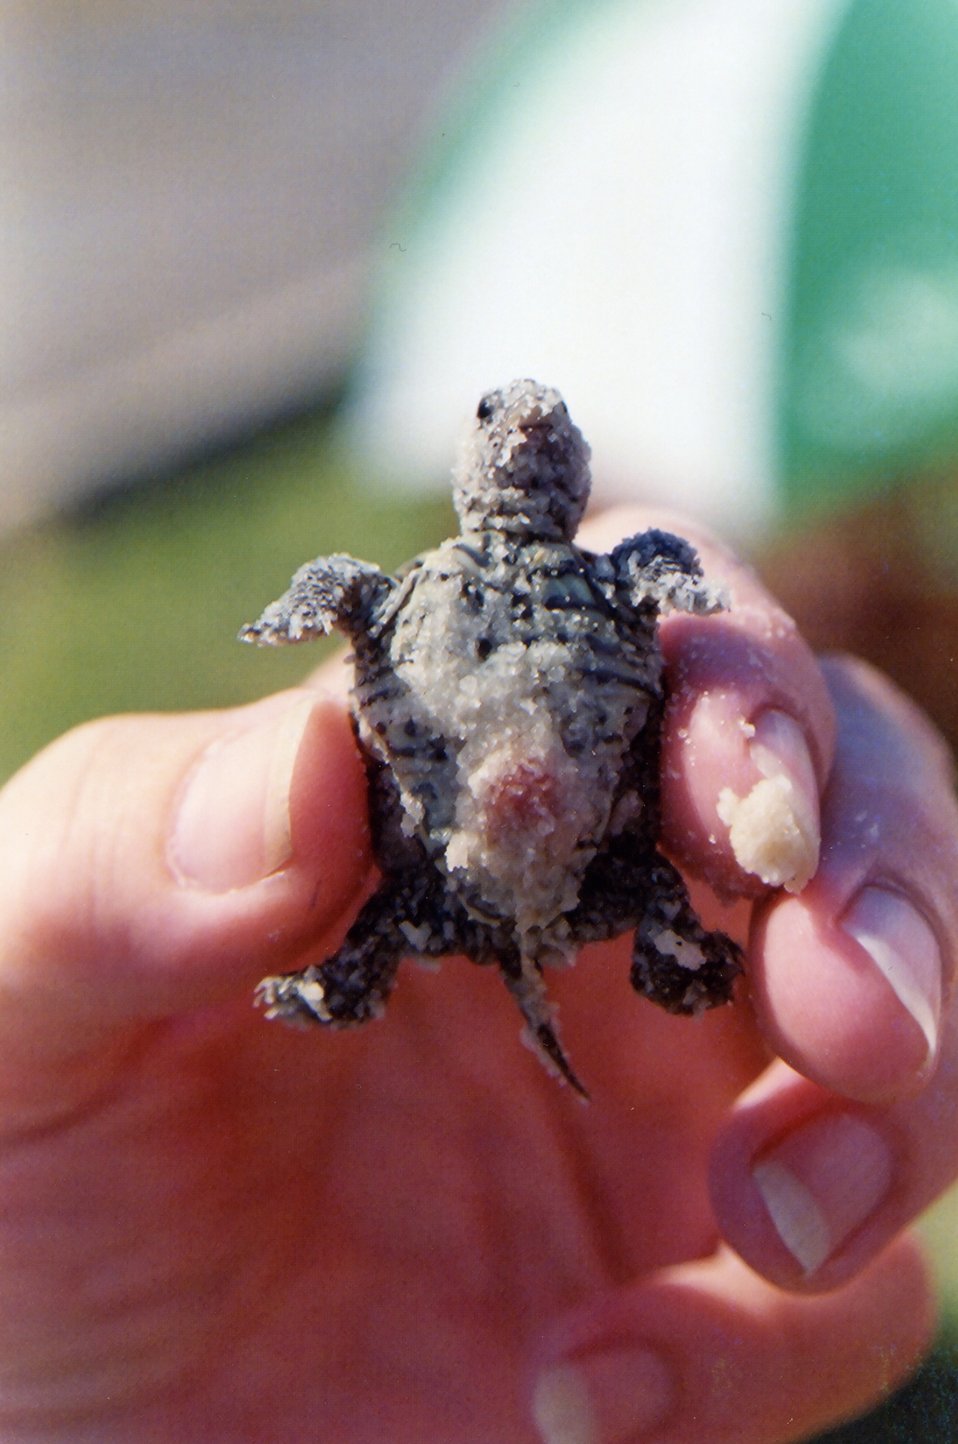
Newly hatched diamondback terrapin. Note the egg sac.